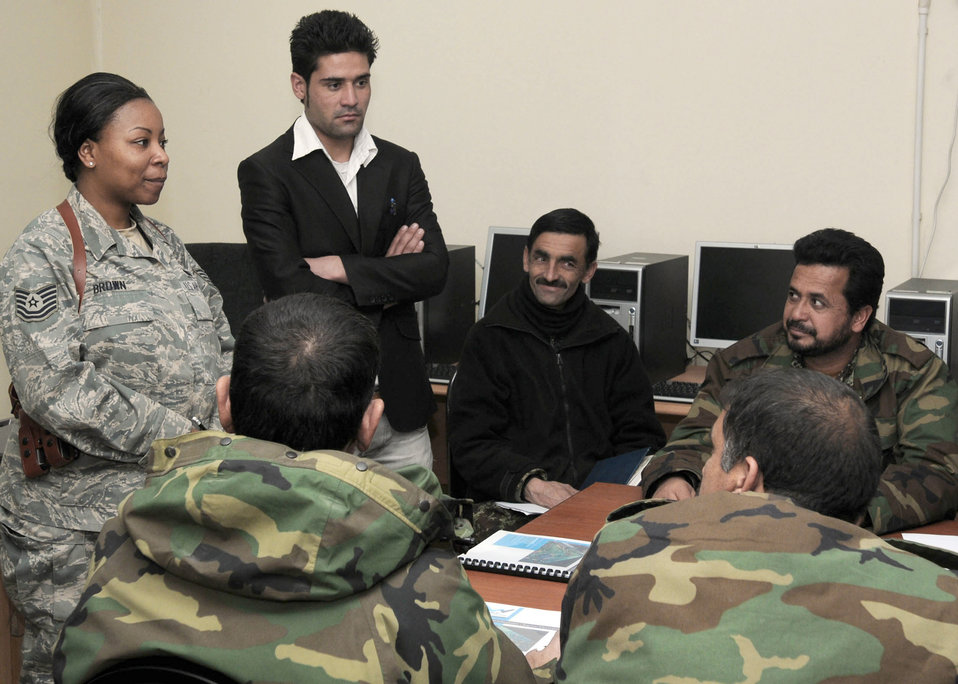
Afghan air force help desk receives upgrade training

Tech. Sgt. Tara Brown talks to members of the Afghan air force who are part of a new computer training course called A training at the Afghan Air Force Base Jan. 17, 2011, in Kabul, Afghanistan. Sergeant Brown is a NATO Air Training Command-Afghanistan communication adviser.